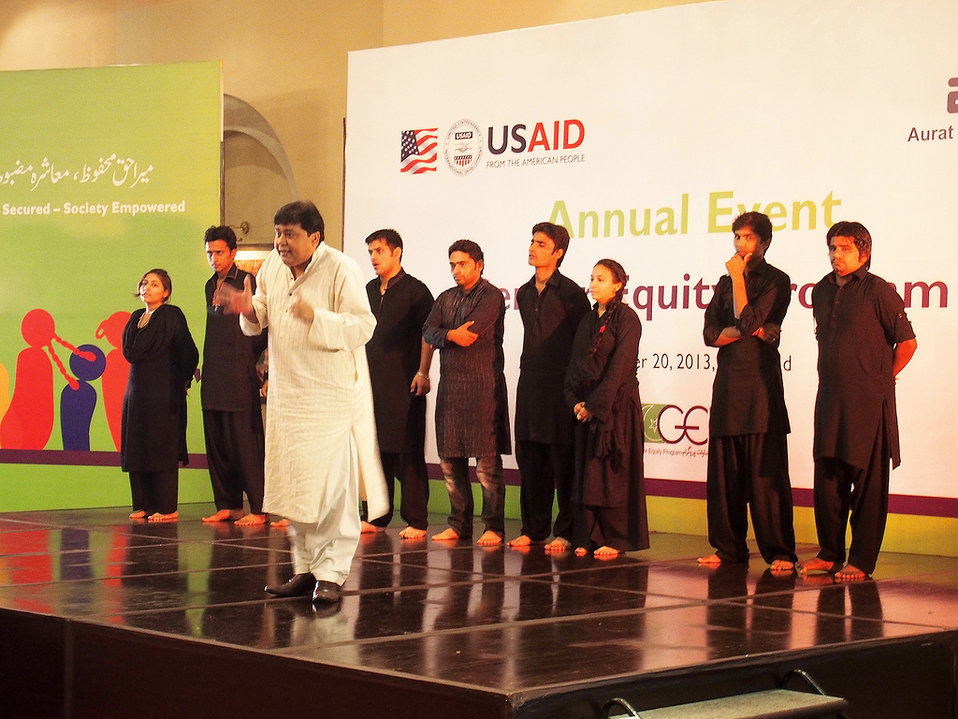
9877Gender Equity Program, Pakistan873504 a3c2c5c10f b

USAID and Aurat Foundation annual event in Islamabad, Sept. 20, 2013